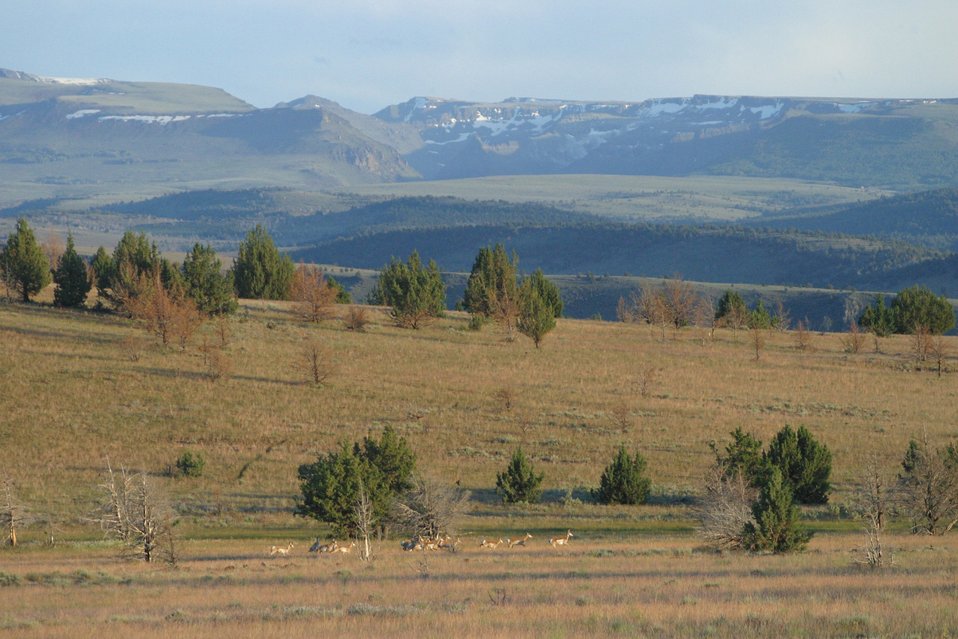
Prong Horn in the Kiger Wild Horse Herd Management Area with Kiger Gorge in the background.